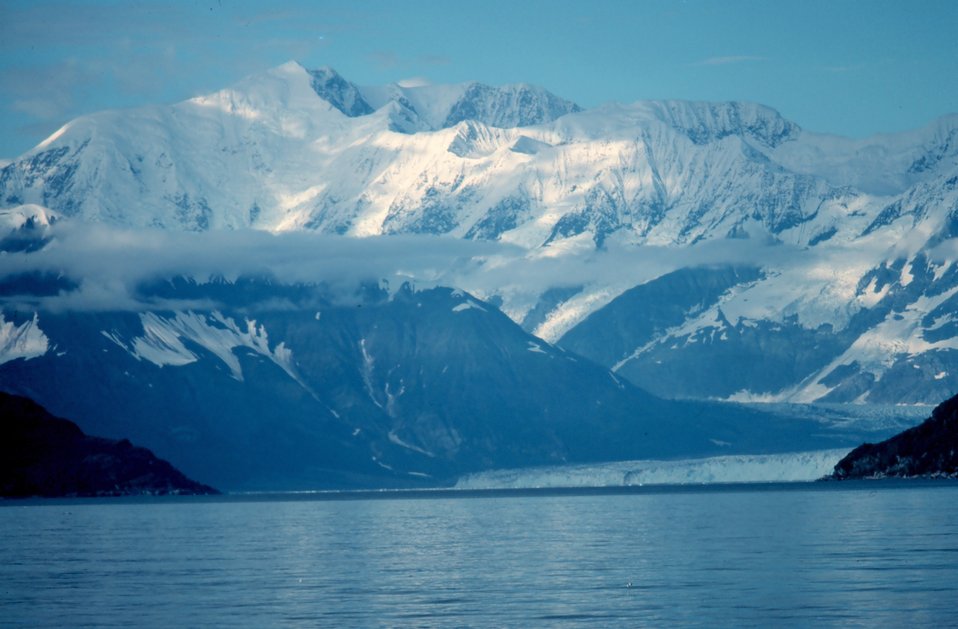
Icy Bay, Mt. St. Elias, Yahtse Glacier